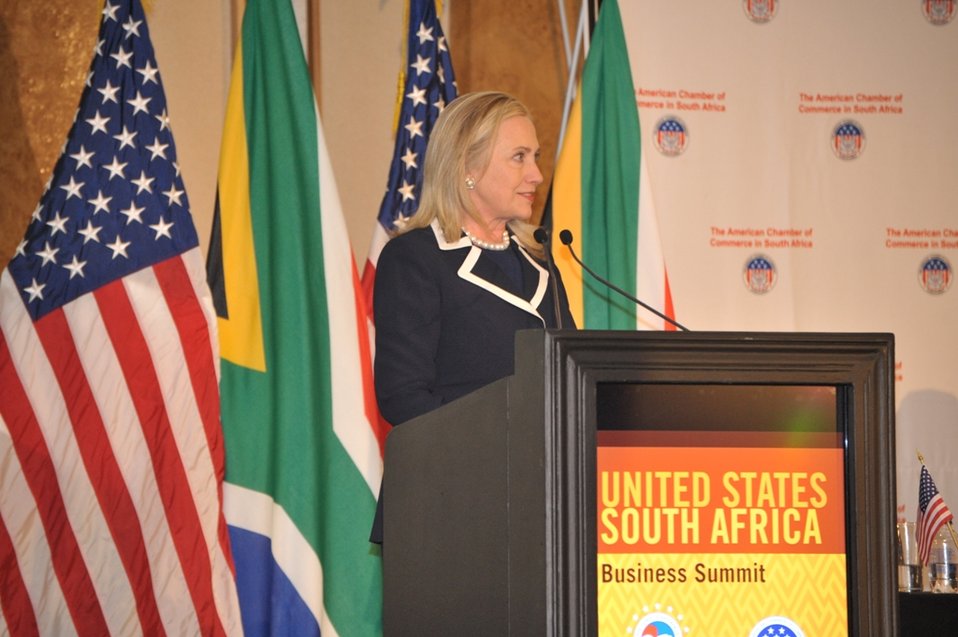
Secretary Clinton Delivers Remarks at the U.S.-South Africa Business Partnership Summit

U.S. Secretary of State Hillary Rodham Clinton delivers remarks at the U.S.-South Africa Business Partnership Summit in Johannesburg, South Africa, on August 6, 2012.